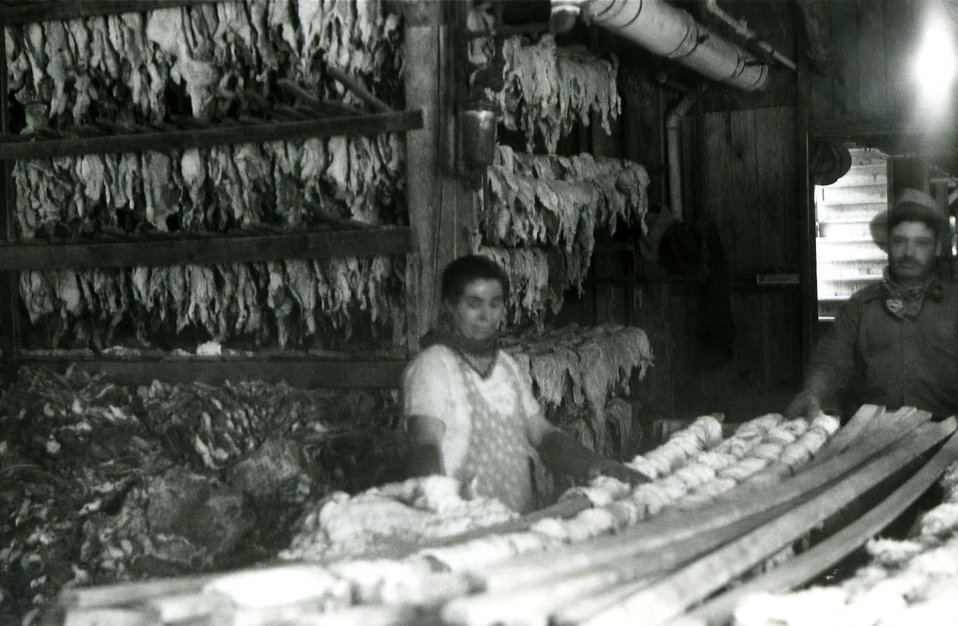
These two people are standing behind racks of drying felt hats inside of a felt hat-making factory, where public health officials conducted numerous studies, which focused on the effects of mercury upon workers who are exposed to this heavy elemental metal. (See complete series: PHIL ID#s: 6810 - 6813).